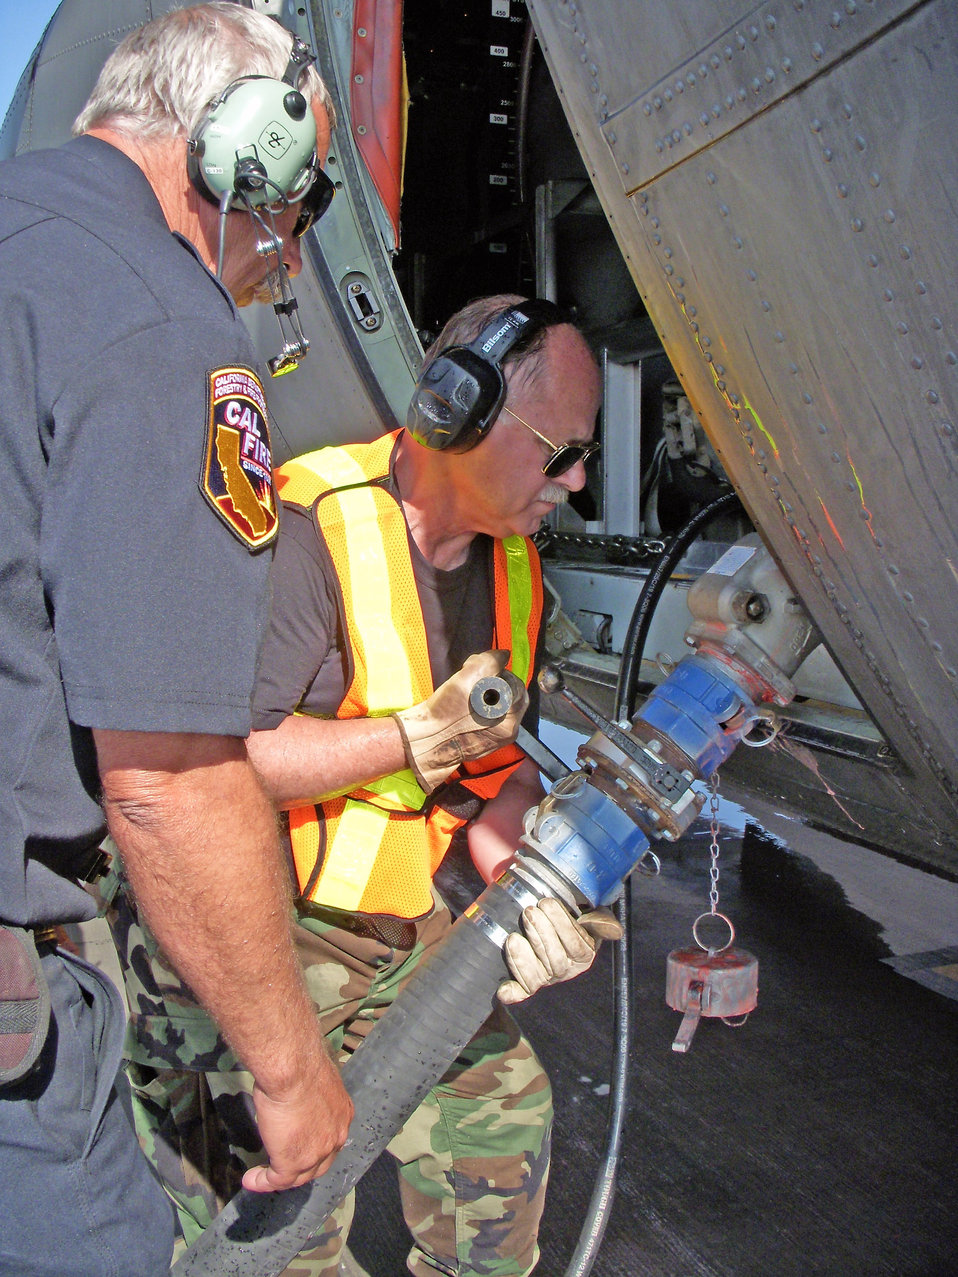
Fire retardant reload operations moved to Channel Islands

Clay Williams, a modular airborne firefighting systems specialist, and Staff Sgt. Richard Walder, with the California Air National Guard's 146th Aerial Port Squadron, connect the fire retardant loading hose to the MAFFS on a C-130 Hercules supporting the 302nd MAFFS fire retardant reload operations at Channel Islands Air National Guard Station.